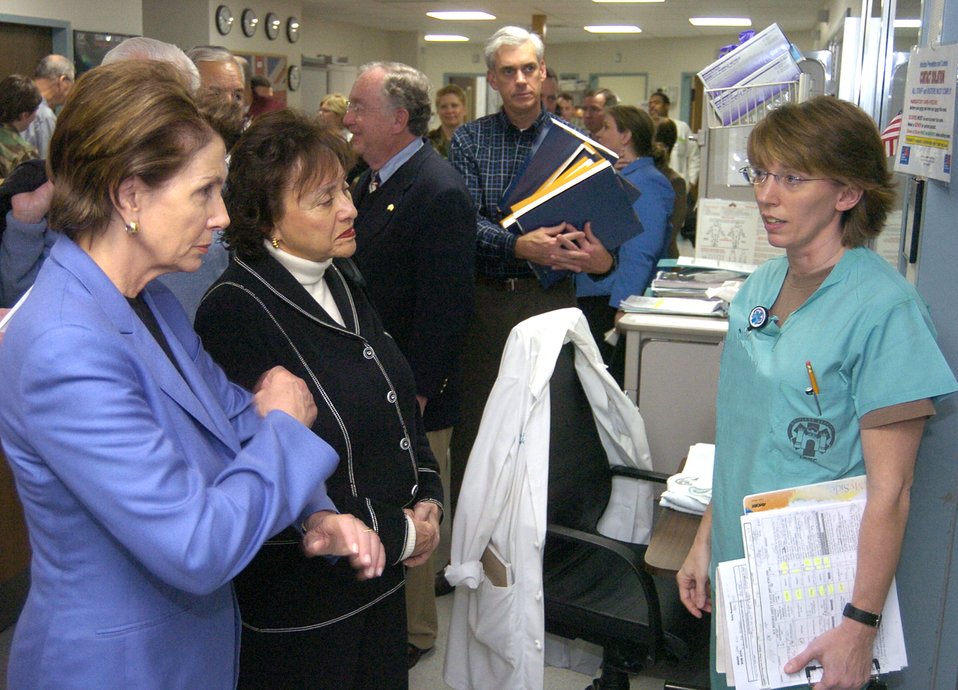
Speaking with the speaker

Speaker Nancy Pelosi and U.S. Rep. Nita Lowey learn of an intensive care unit patient's condition from Capt. Emily Leiter, an ICU nurse Jan. 29 at Landstuhl Regional Medical Center in Germany. Congresswoman Pelosi of California, Congresswoman Lowey of New York, and a congressional delegation visited Landstuhl Regional Medical Center to meet staff and thank injured servicemembers for their service.